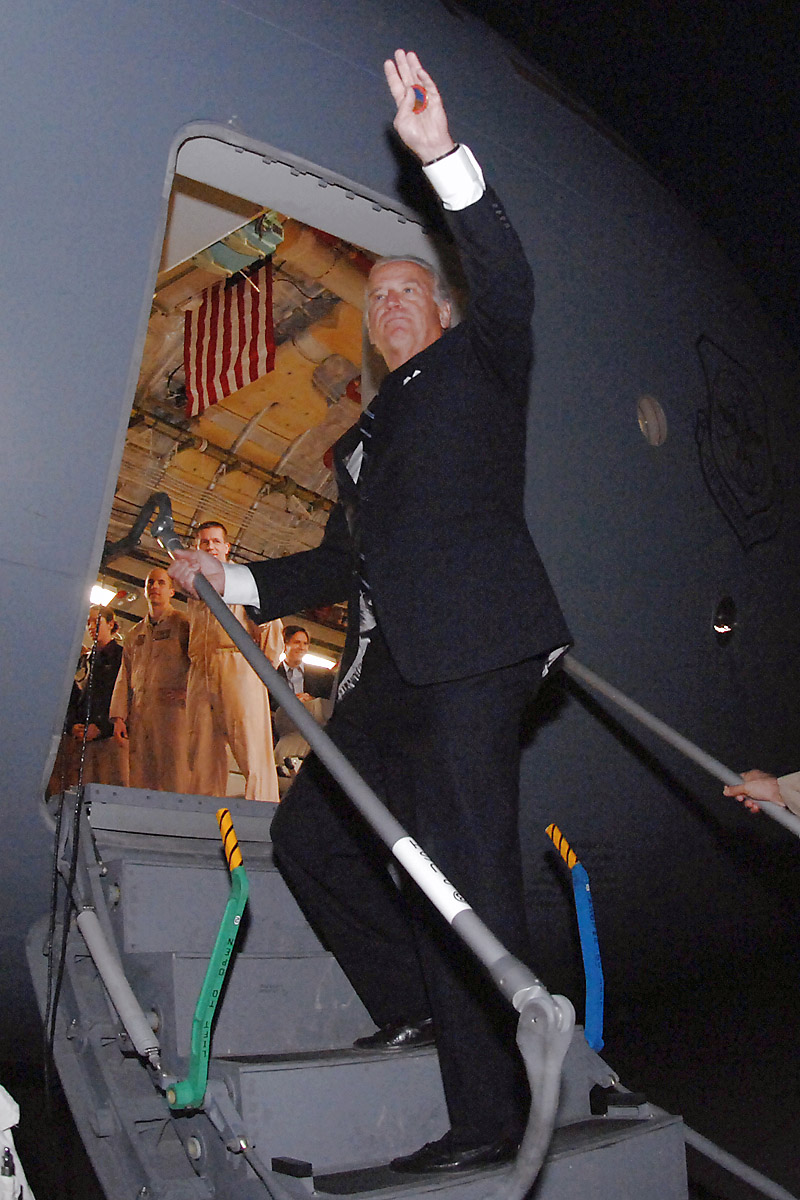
Kirkuk servicemembers host vice president-elect

Vice president-elect Joe Biden waves goodbye to Soldiers and Airmen after his visit Jan. 13 at Kirkuk Air Base, Iraq. The Delaware senator and Senate Foreign Relations Committee chairman thanked troops for their service before his departure.